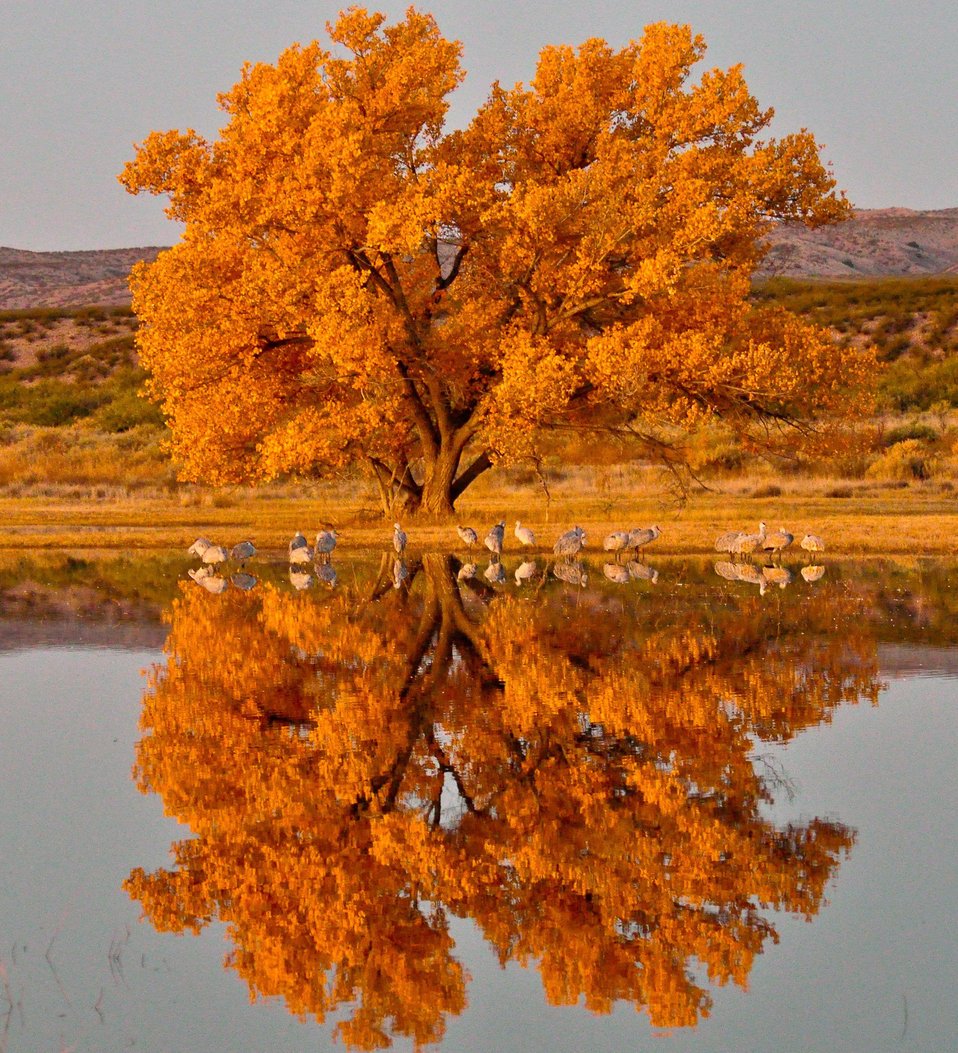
Bosque del Apache National Wildlife Refuge

Cottonwood and sandhills cranes in wetland in fall, Bosque del Apache National Wildlife Refuge, NM.